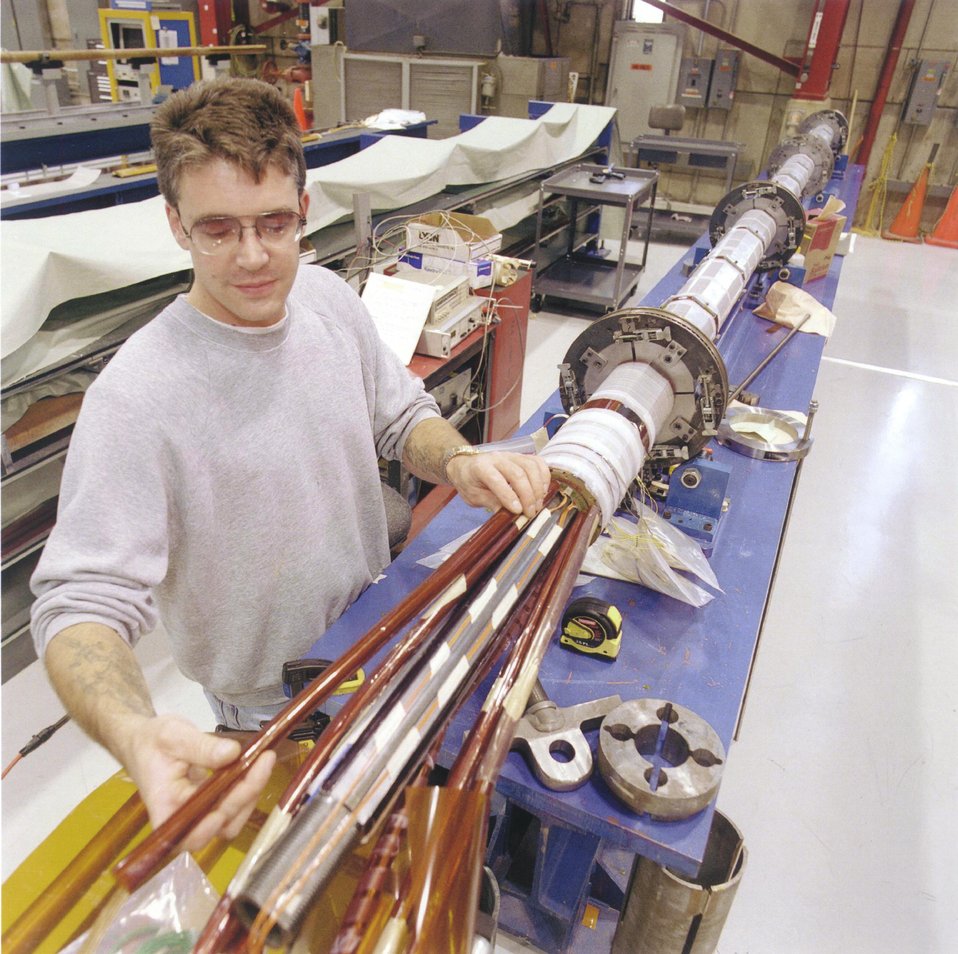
TECHNICIAN INSPECTS MAGNETS BEING DEVELOPED AT FERMI, FOR THE LARGE HADRON COLLIDER AT CERN.

FERMI HAS JOINED A COLLABORATION TO DEVELOP AND BUILD EIGHT FINAL FOCUSING SECTIONS OF MAGNETS FOR THE LARGE HADRON COLLIDER AT CERN, THE EUROPEAN PARTICLE PHYSICS LABORATORY NEAR GENEVA, SWITZERLAND. FERMI IS ONE OF THE WORLD'S TOP LABORATORIES IN MAGNET RESEARCH AND DEVELOPMENT. THE LHC WILL BE THE WORLD'S MOST POWERFUL PARTICLE ACCELERATOR, FEATURING THE WORLD'S LARGEST ASSEMBLY OF POWERFUL MAGNETS.